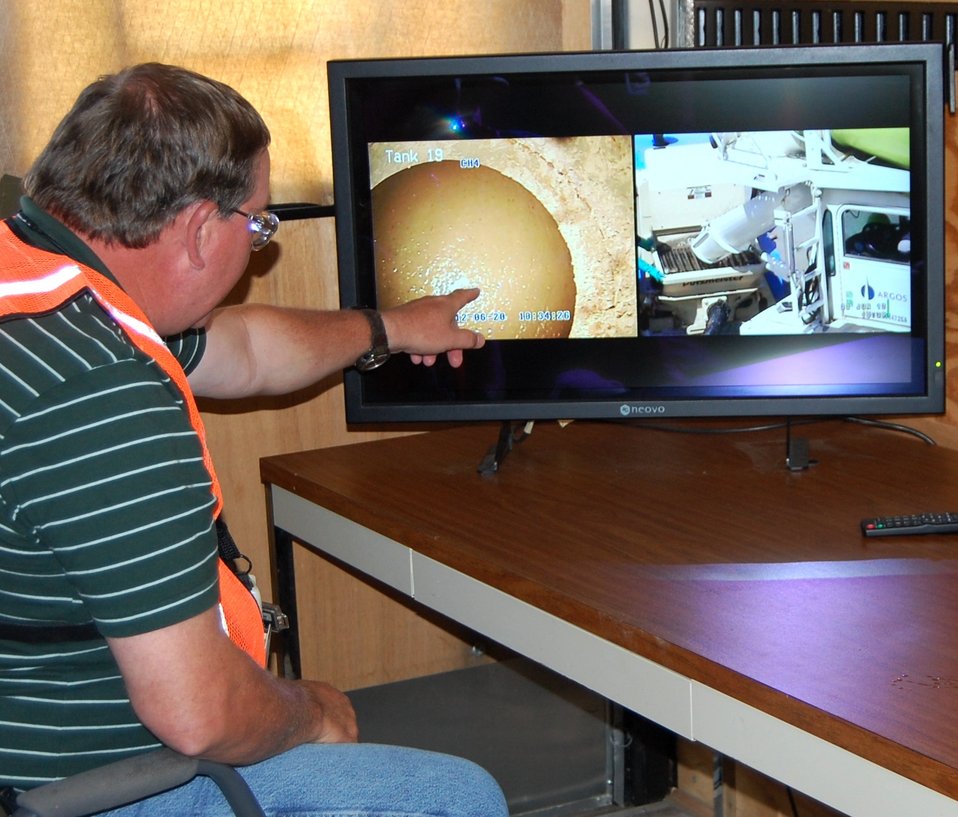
Bulk Grouting on 2 SRS Waste Tanks Complete; Final Tank Capping Expected Later This Summer

July 2012 - SRR Tanks 18 and 19 Closure Project Manager Jim Herbert watches the final bulk grouting of Tank 19 inside a mobile control room at the Savannah River Site.